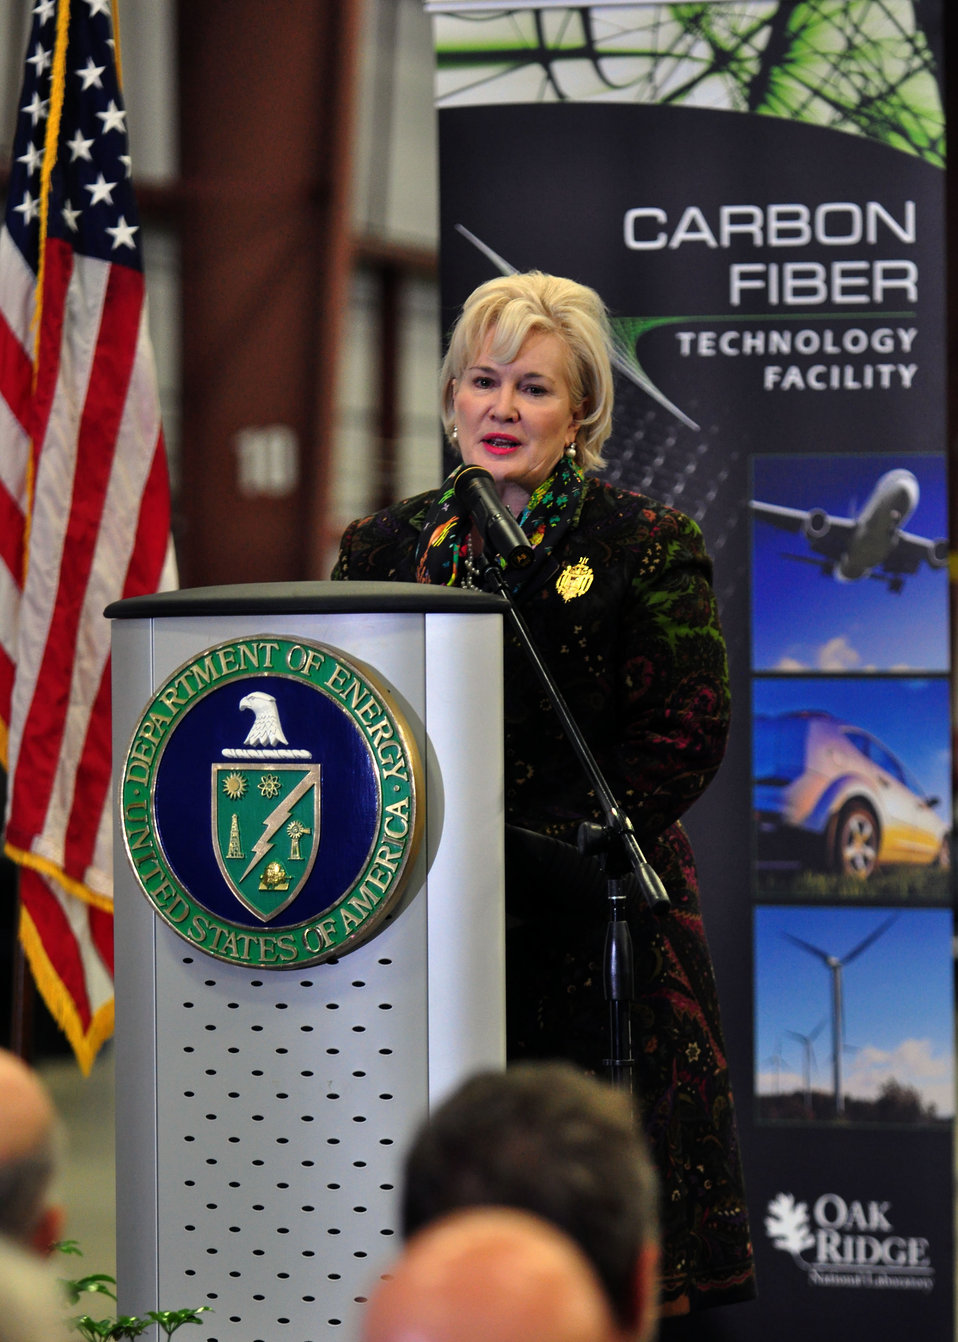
Carbon Fiber Technology Facilty Open House Oak Ridge Tennessee

13-025 DOE photo Lynn Freeny
Council on Competitiveness CEO Deborah Wince-Smith